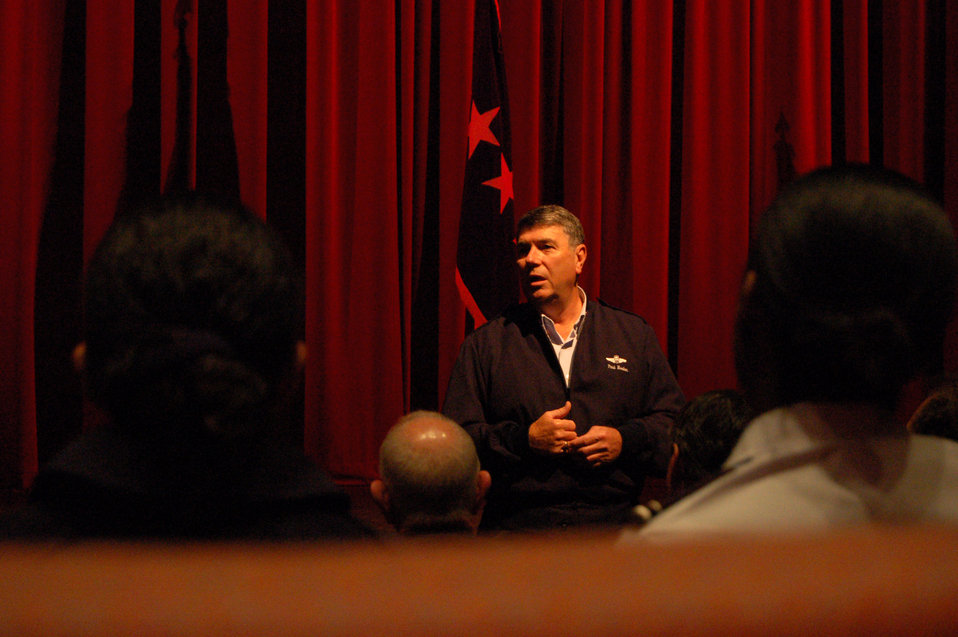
General talks to next greatest generation

Gen. Paul V. Hester addresses a crowd Dec. 6 at an auditorium on the University of Houston campus. The crowd included members for the university's ROTC detachment, Houston-area junior ROTC detachments and university officials. General Hester is the Pacific Air Forces commander and visited Houston to brief the